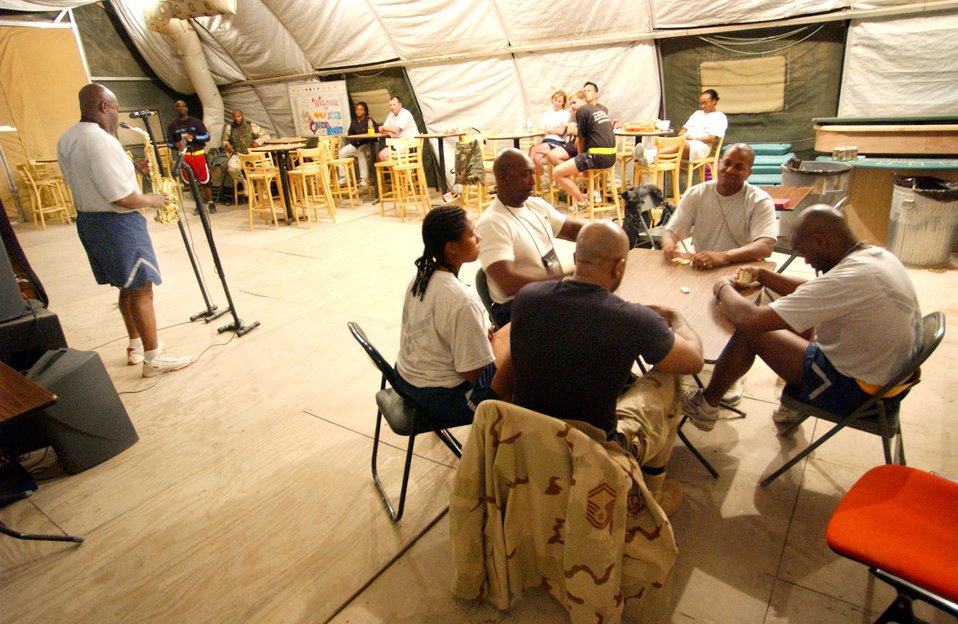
Jazz night in Baghdad be-bops with Airmen's notes

BAGHDAD, Iraq -- Master Sgt. Rosmon Johnson plays his alto saxophone for the crowd on jazz night. He is a heating, ventilation and air conditioning craftsman deployed from Scott Air Force Base, Ill.